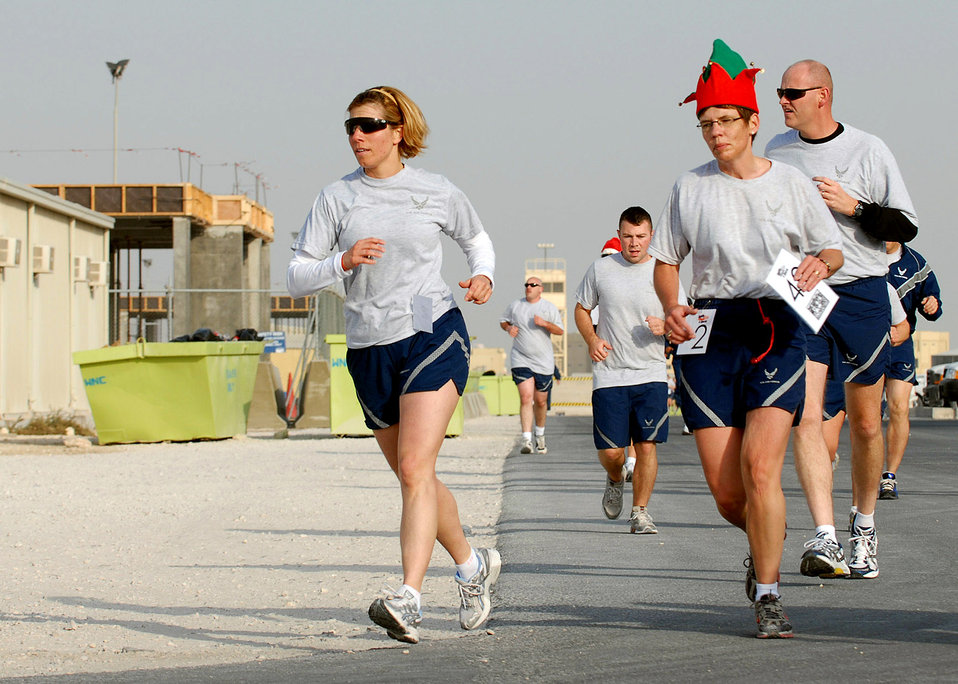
Deployed Airmen enjoy holidays

Lt. Col. Susan Ferrera (left) and Master Sgt. Julie Privette participate in a Reindeer Run Dec. 25 at a Southwest Asia air base. Colonel Ferrera is the 379th Expeditionary Services commander, and Sergeant Privette is assigned to the 379th ESVS.